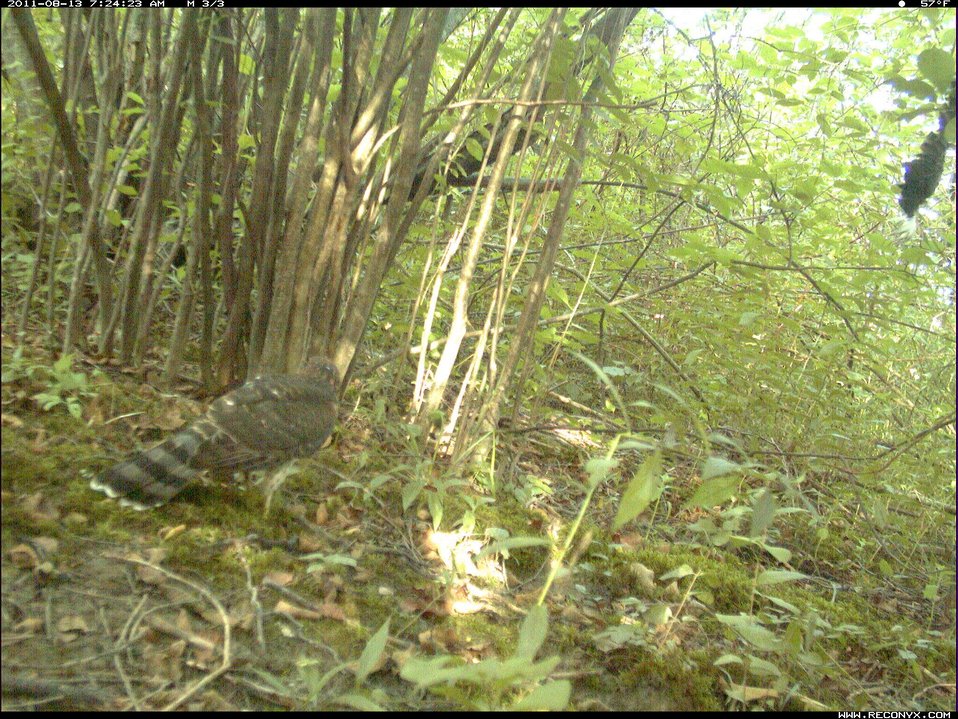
Broad-winged Hawk